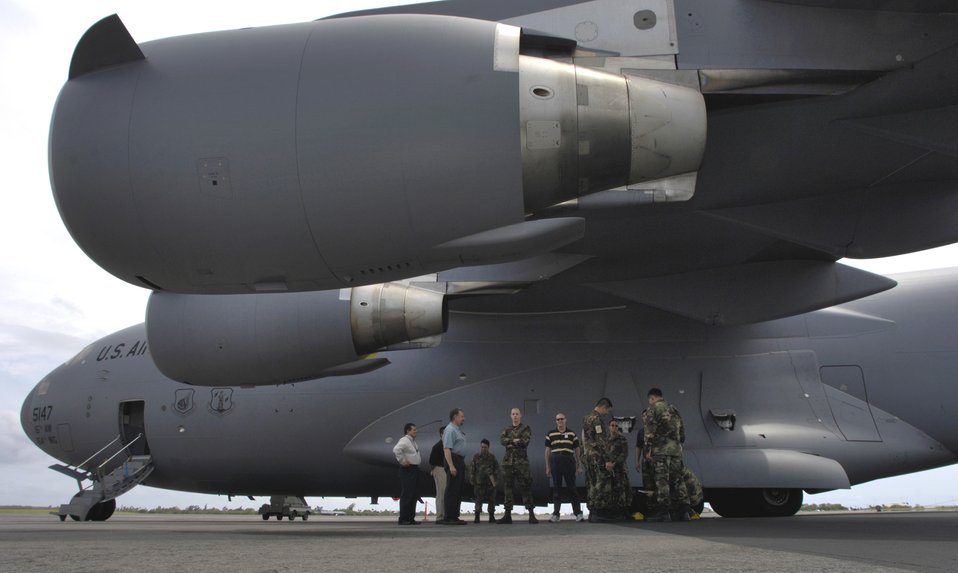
Hickam C-17 crews learn 'Lean' concepts

Boeing representatives and Airmen from the Hawaii Air National Guard's 154th Maintenance Squadron discuss maintenance procedures for a C-17 Globemaster III at Hickam Air Force Base, Hawaii, on Tuesday, April 11, 2006. The guardsmen are learning how to streamline their maintenance processes.